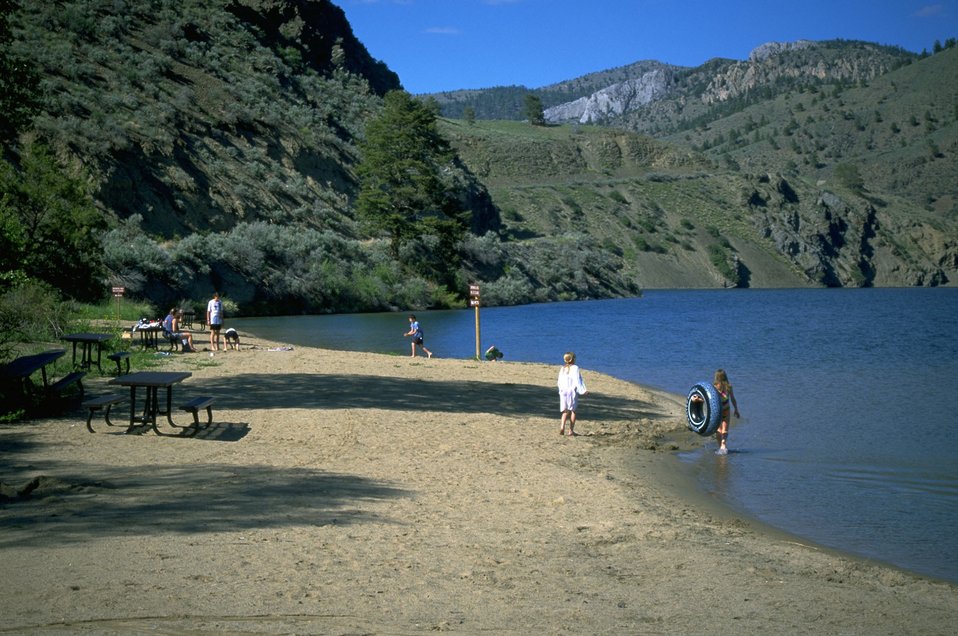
Swimming Area at Houser Lake